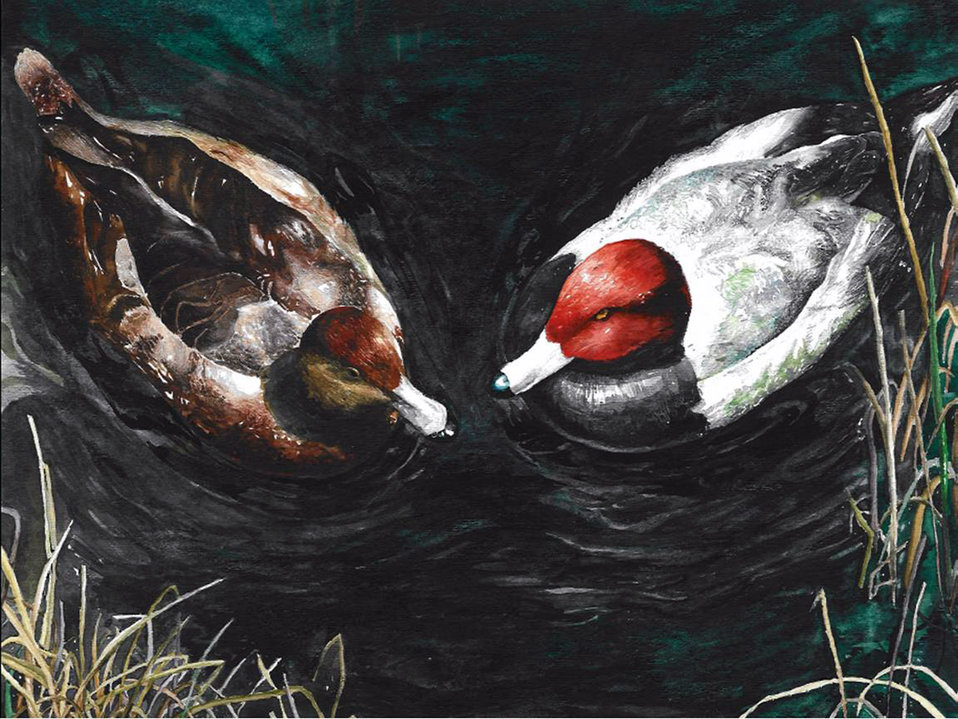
NewYork

2012 Jr Duck Stamp Program
State Best of Show
New York